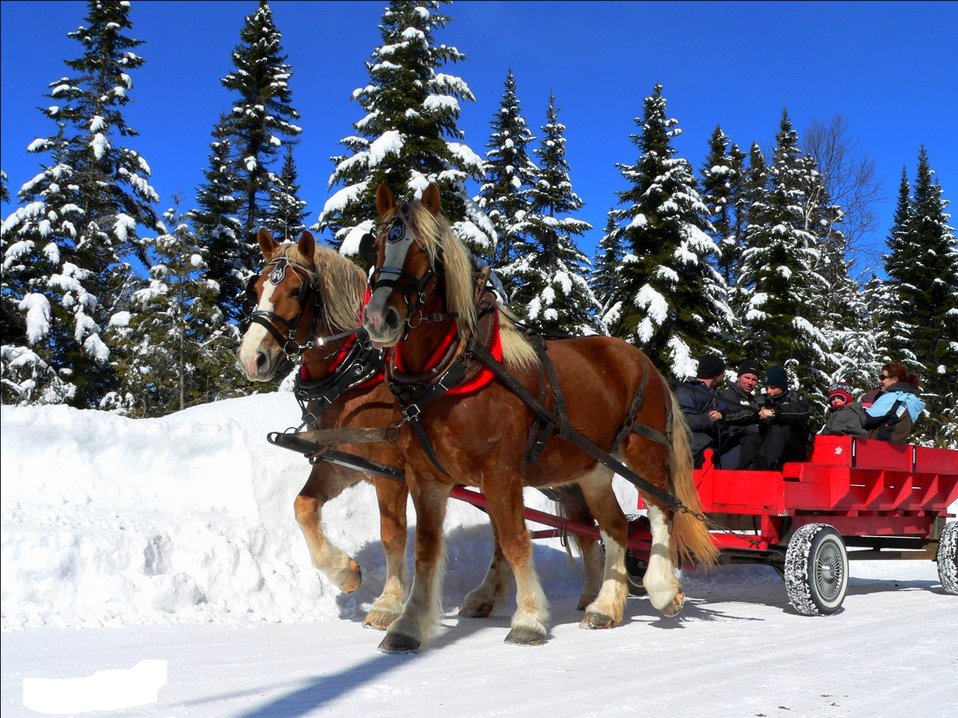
Sleigh ride on a sunny day.